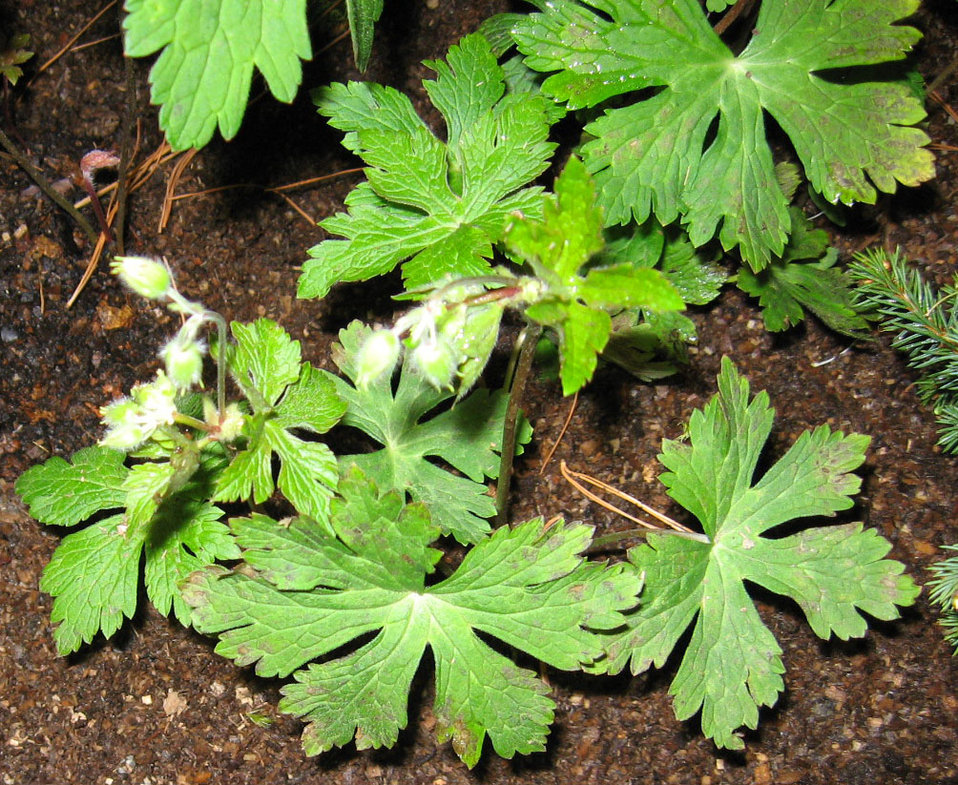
Wood geranium

Geranium maculatum (Wood geranium), a native plant

Learn more about EPA’s Exhibit at the 2010 Philadelphia International Flower Show:
www.epa.gov/reg3esd1/garden/flower show.htm
www.epa.gov/reg3esd1/garden/flower show plants.htm
www.epa.gov/reg3esd1/garden/pdf/flowershow2010.pdf (6 pp, 864K)